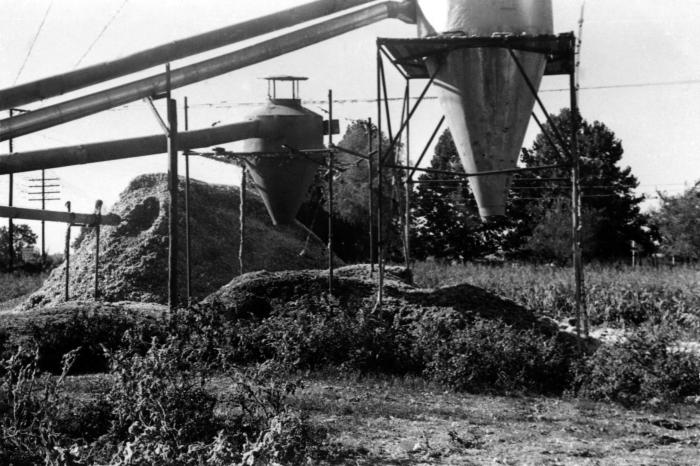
This 1952 historical photograph was provided by the Center for Disease Control's (CDC), National Institute for Occupational Safety and Health (NIOSH), and depicted what appeared to be an agricultural processing plant stocked with raw, unrefined material, which had been arranged in large piles alongside the plant. This image was part of a collection that was used to document the many aspects of various industrial activities, so as to better understand these workplace environments, and their associated hazards. In gaining a better understanding of workplace hazards, protocol-formulating bodies such as NIOSH, are better able to create a safer workplace through substantiation of appropriate safety regulations.